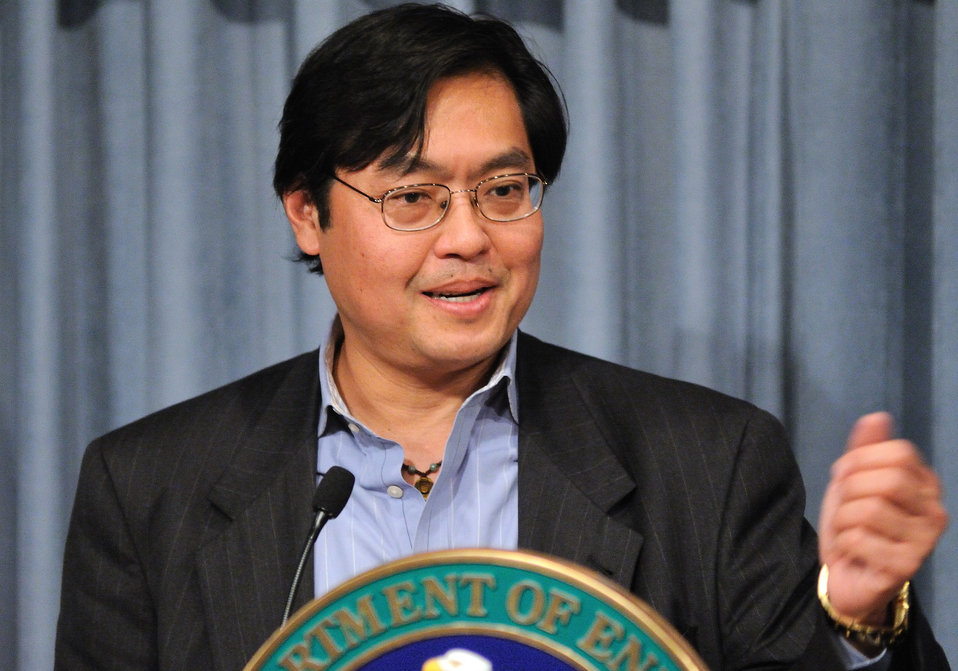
AAPI Heritage Month 2011 (5)